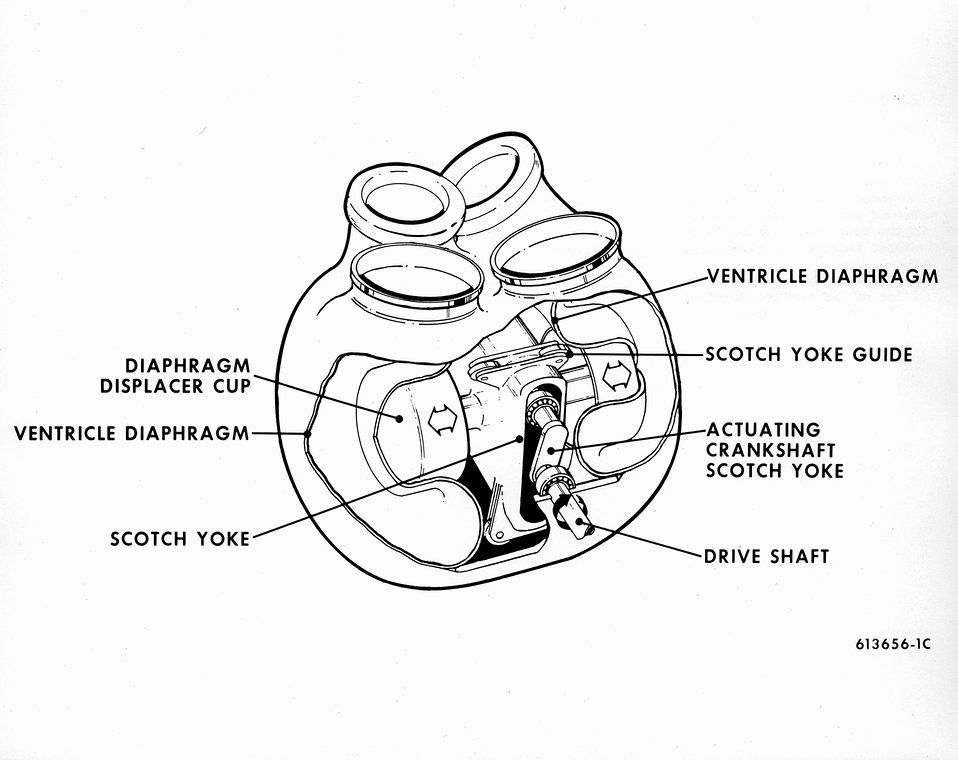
The blood pump for the artificial heart under assessment by the Atomic Energy Commission would have a volume of 2.2 pounds or 1.47 pints, with outside dimensions of 5.5 by 4.7 by 3.9 inches. Circa 1973.